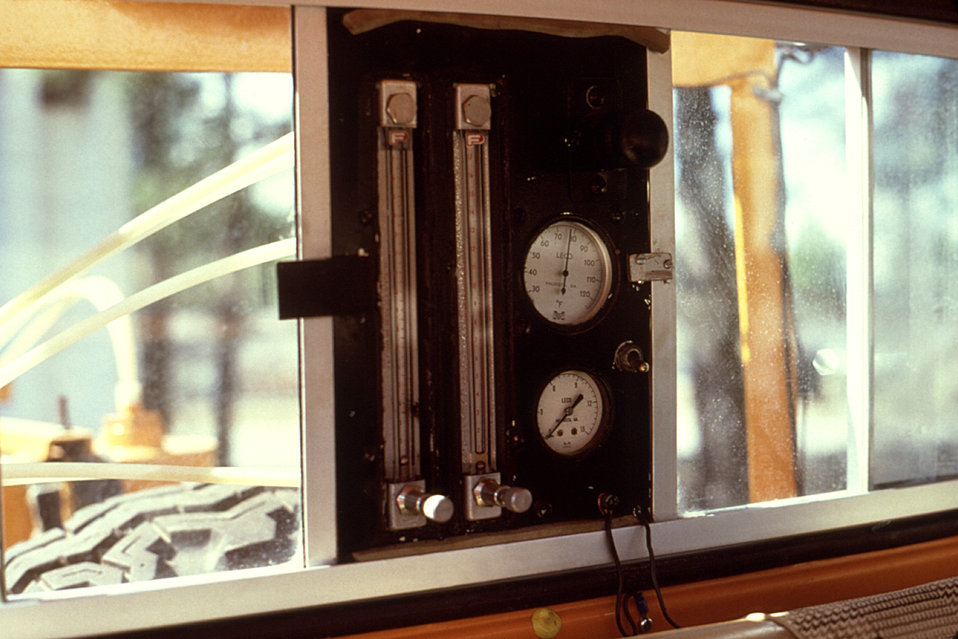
This 1981 image depicts a close-up perspective of a truck-mounted LECO-HD ULV (ultra-low volume) non-thermal fog generator's dual flow meter control panel located in the truck's cab, allowing the truck's driver to regulate the insecticide concentrations.